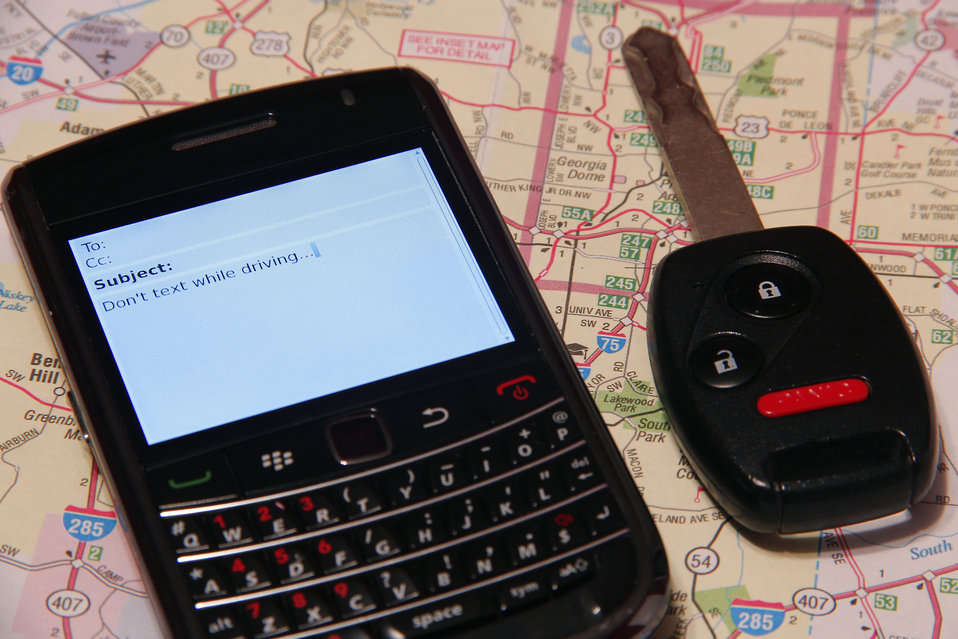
This image depicts a cellphone and an automobile electronic key fob that had been placed atop a map of the city of Atlanta, Georgia. Use of the cellphone while driving in order to send and receive text messages, or to navigate your route, raises the risk for an automobile accident dramatically, and is illegal in many states.